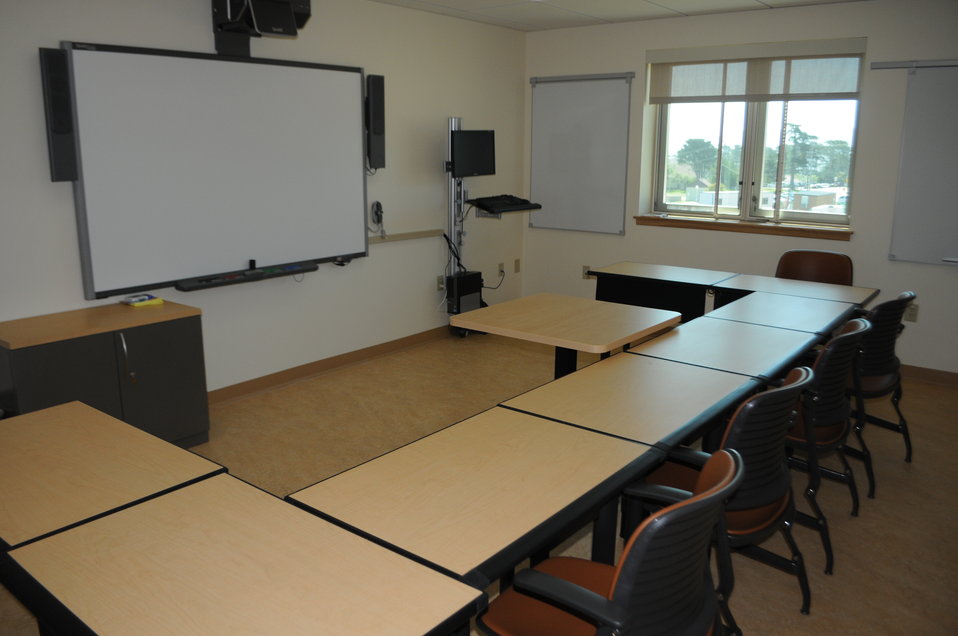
New general instruction building at Presidio of Monterey

One of 40 new classrooms at the new general instruction building at the Presidio of Monterey in Monterey, Calif., shown April 19, 2012. The U.S. Army Corps of Engineers Sacramento District oversaw construction of the building, used by the Defense Language Institute to teach military personnel foreign languages.